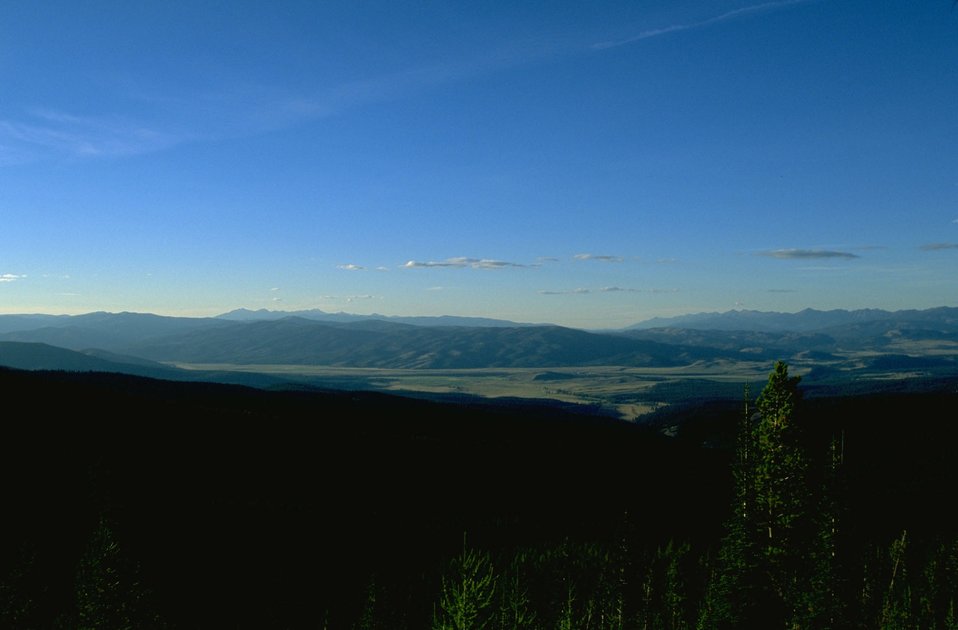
Scenic view from Garnet Back Country Byway--Balckfoot Valley